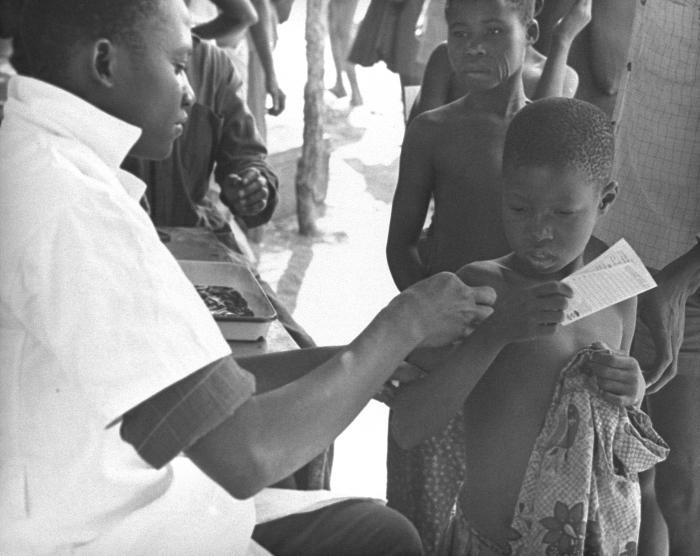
These children receiving their smallpox vaccinations were participants in Nigeria's 1968 Smallpox Eradication Program.